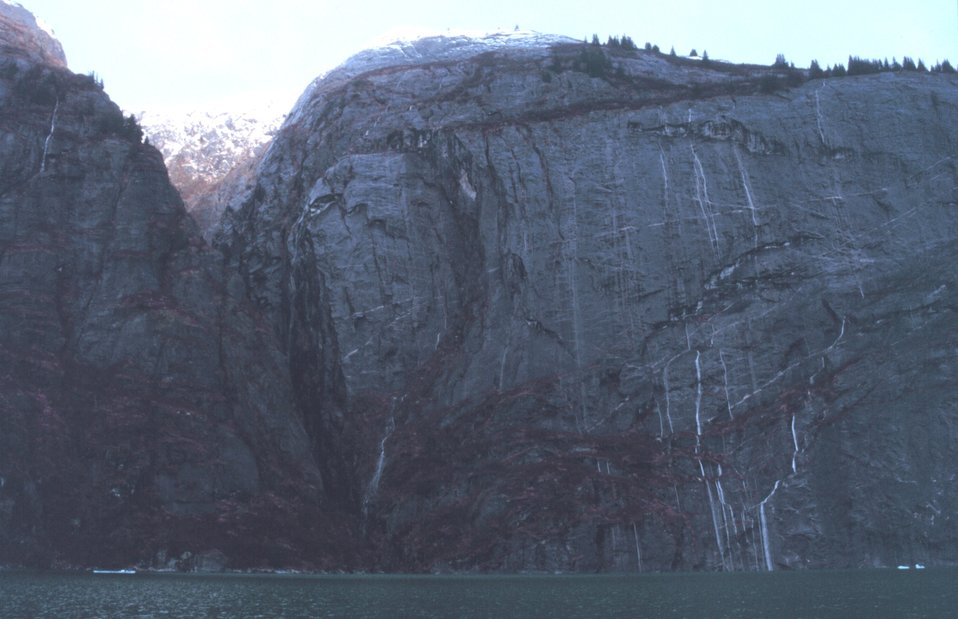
Waterfalls abound throughout Tracy Arm Fjord